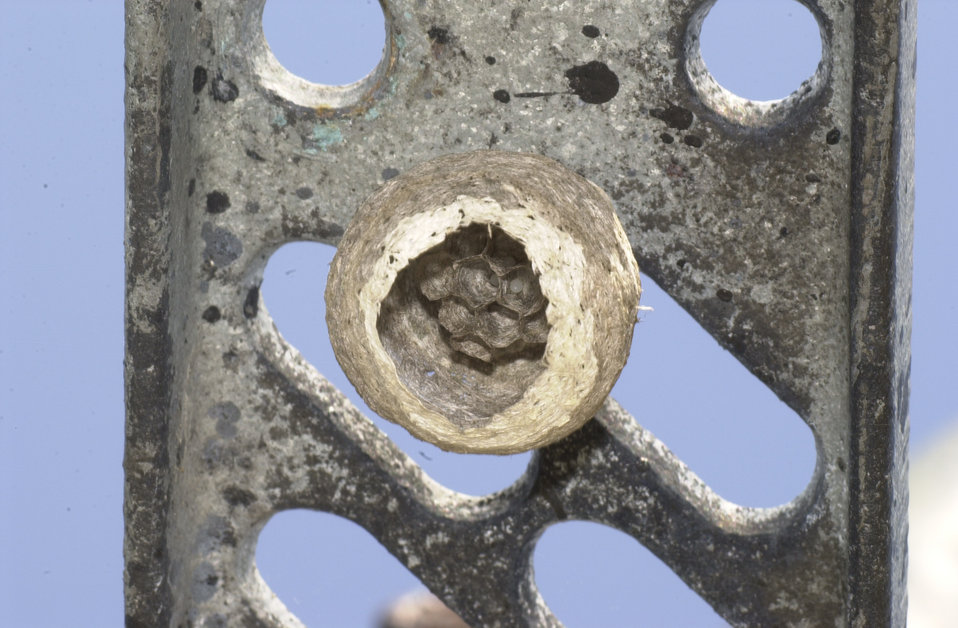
Photographed in New Bedford, Massachusetts, by Harvard University, Dept. of Environmental Health and Safety entomologist/environmental biologist, Dr. Gary Alpert, this image depicted a newly begun, 'initial' 'Bald-faced' hornet, Dolichovespula maculata, nest. Bald-faced hornets are common in both wooded and urban areas in New England. A 'carton nest', which is more or less a 'nest within a nest', as seen in this image, a queen starts a new nest each spring after the weather warms up in late April or May.